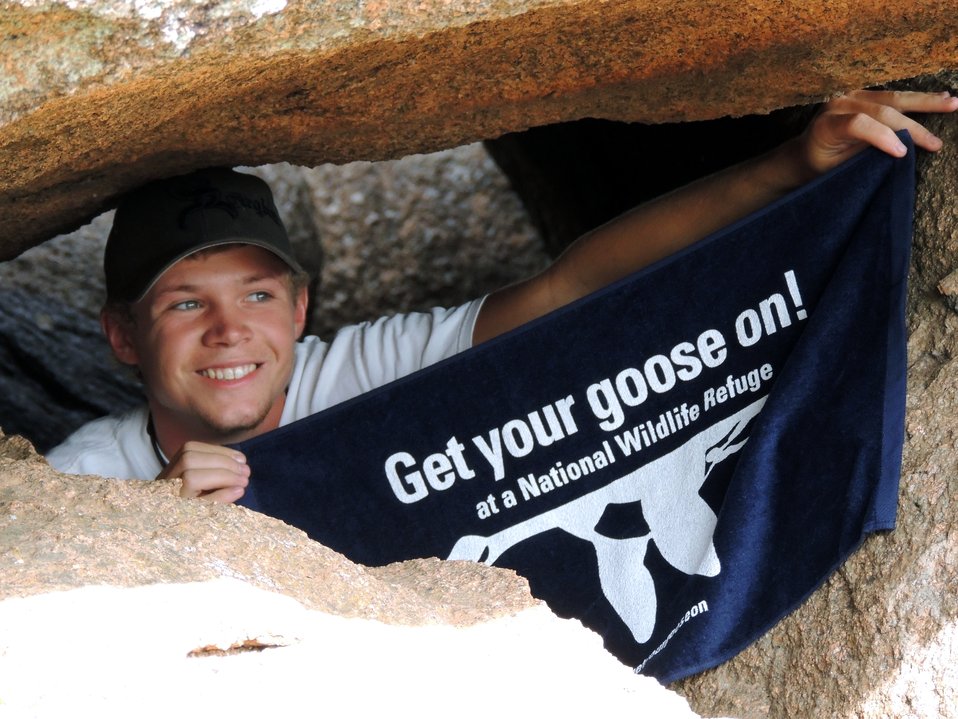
Get Your Goose On!

Wichita Mountains National Wildlife Refuge in Oklahoma.